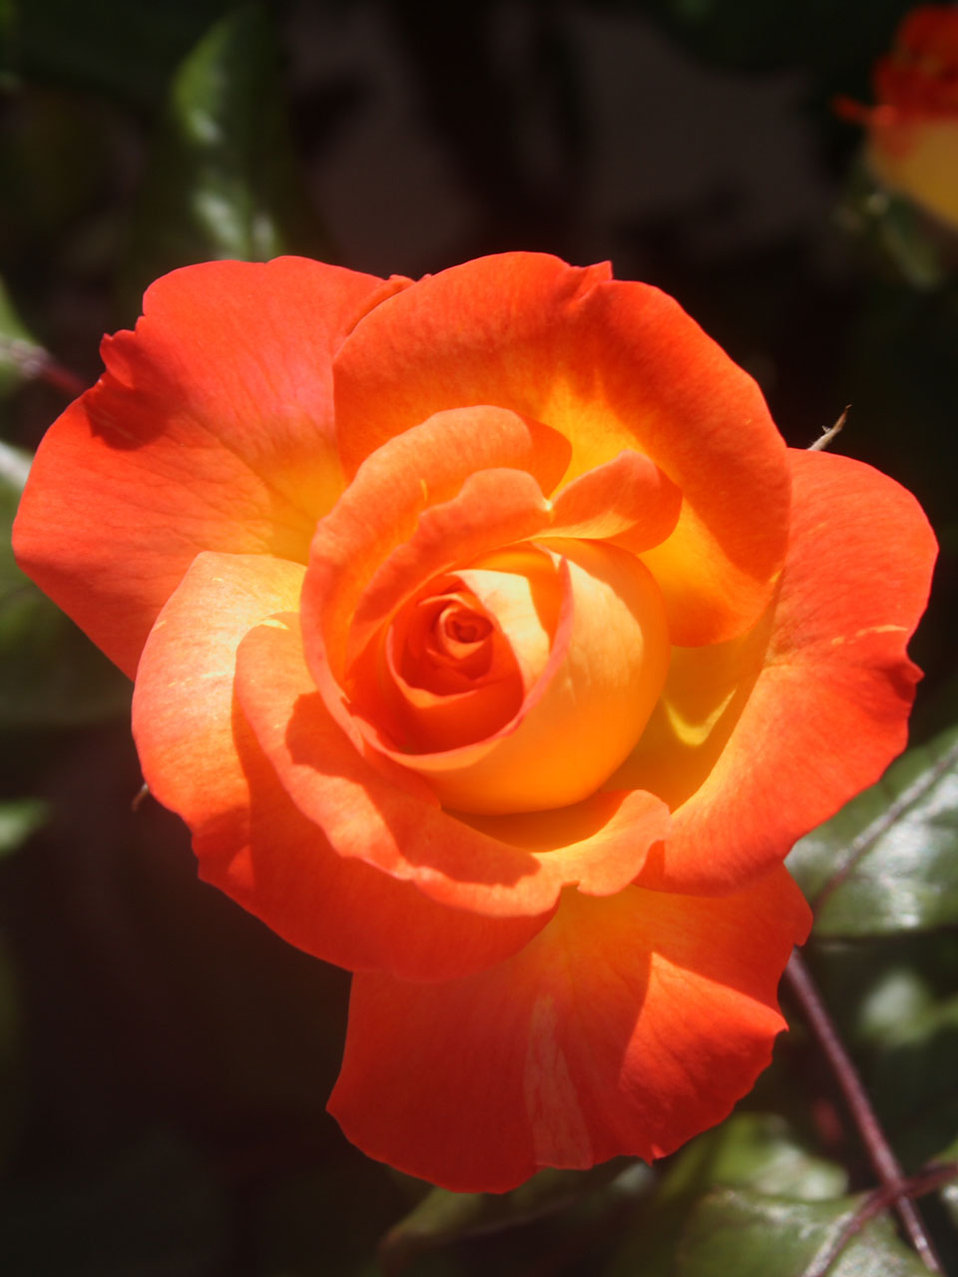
Orange and yellow rose

From a neighborhood photo walk on 14 june 2009 in huntington beach, ca.